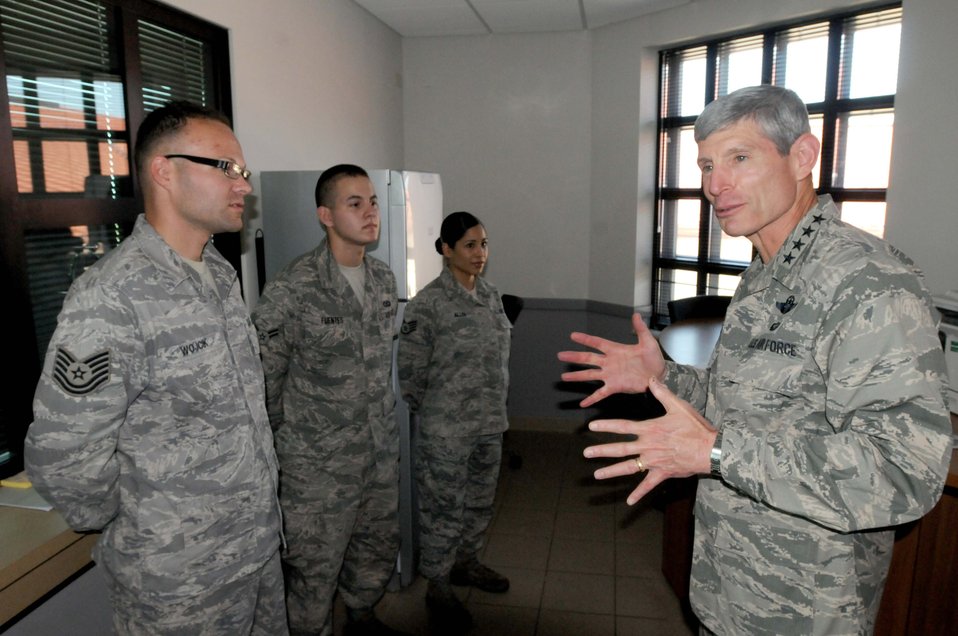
Chief of staff and spouse visit Aviano Air Base

Air Force Chief of Staff Gen. Norton Schwartz visits with Airmen from the 724th Air Mobility Squadron air mobility command center at Aviano Air Base, Italy, July 12, 2011. The general and his wife Suzie were visiting Aviano to meet with Airmen and their families and observe the installation’s mission.